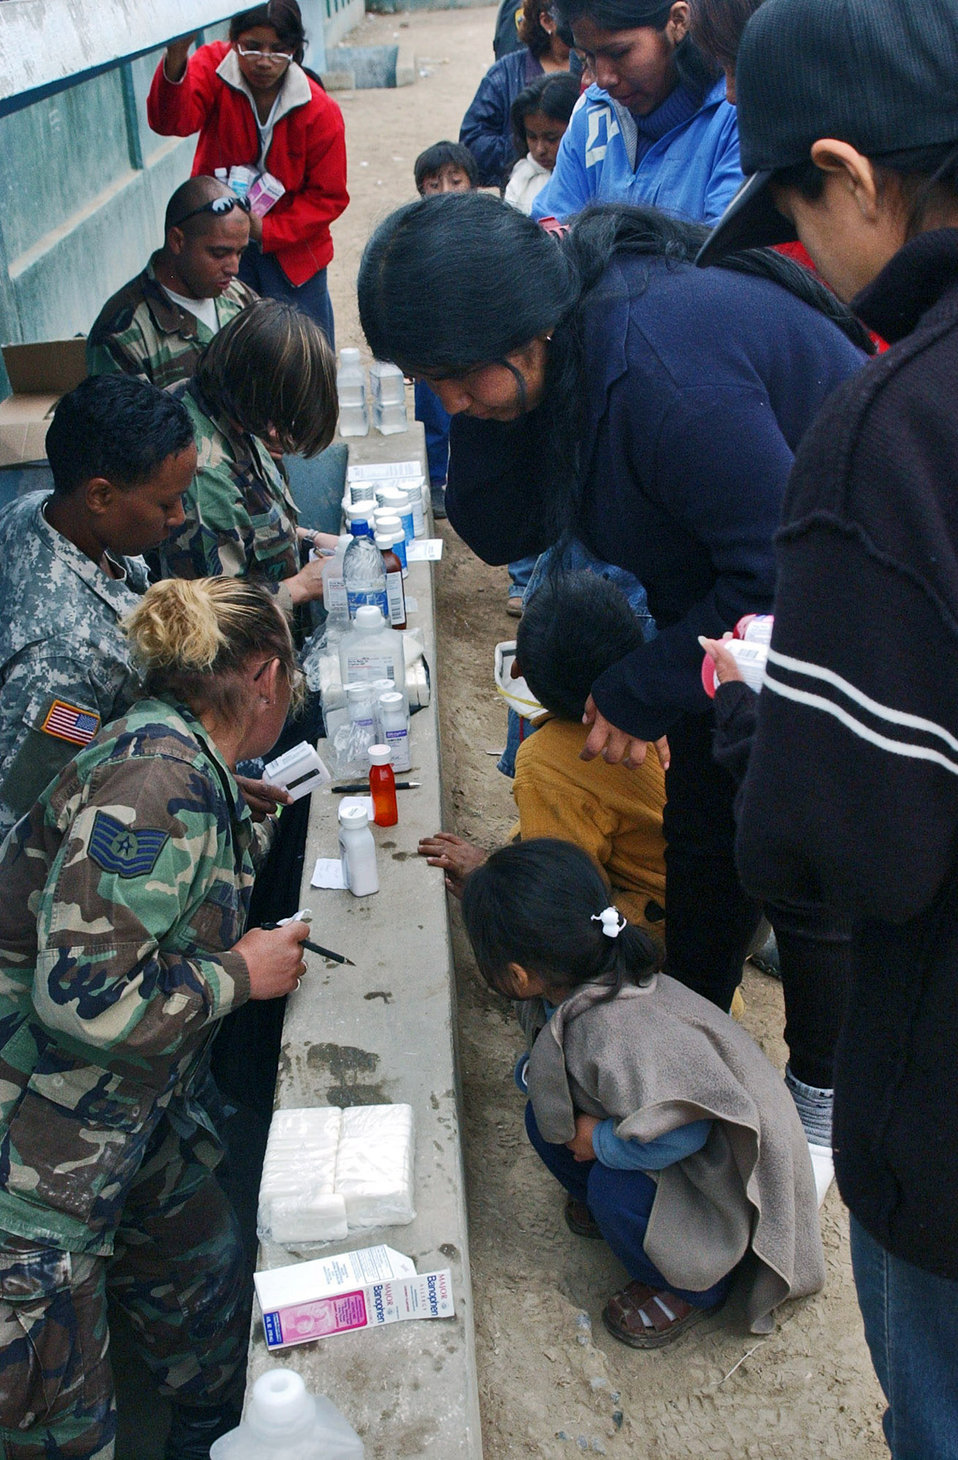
Relief in Peru

Patients line up as members of Joint Task Force-Bravo's medical humanitarian relief task force hand out prescribed medicines Aug. 21 in Pisco, Peru. The team saw more than 1,500 patients in three days, diagnosing ailments such as gastro-intestinal illness and respiratory infections. The humanitarian relief task force was sent to Pisco following the 8.0 magnitude earthquake that struck the region Aug. 15.